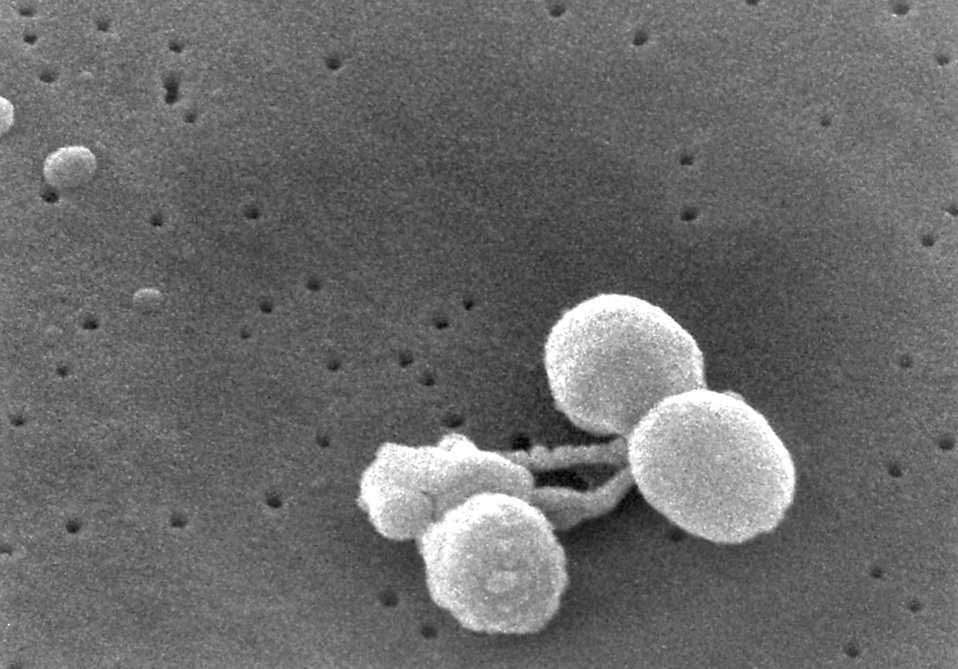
Scanning electron micrograph (SEM) of a number of Gram-positive Streptococcus pneumoniae bacteria. See PHIL 9996 for a colorized version of this image.